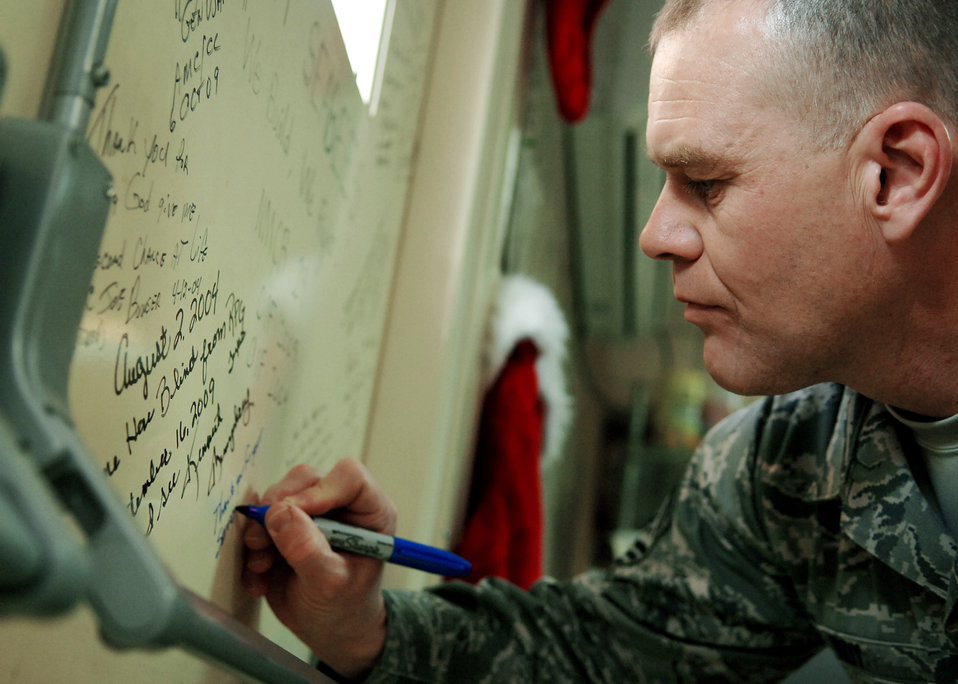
Chief master sgt. of the Air Force visits Joint Base Balad

Chief Master Sgt. of the Air Force James A. Roy signs the warrior wall Dec. 4, 2009 at the Air Force Theater Hospital at Jooint Base Balad, Iraq. During his first visit to JB Balad as the chief master sergeant of the Air Force, Chief Roy toured various locations on the base and mentored Airmen during an Airman's call.